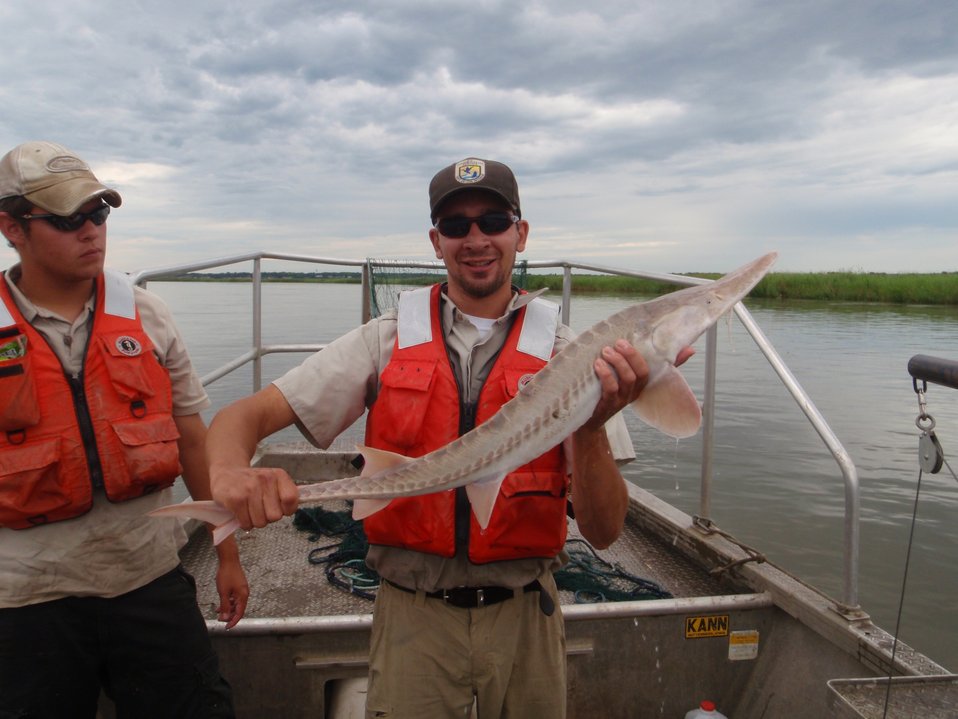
Employee with Pallid Sturgeon

The Great Plains Fish and Wildlife Conservation Office in South Dakota completed its 9th year of monitoring the Missouri River downstream of Fort Randall Dam in South Dakota and Nebraska. Collecting pallid sturgeon & fish community data is crucial to assessing success of on-going recovery efforts.